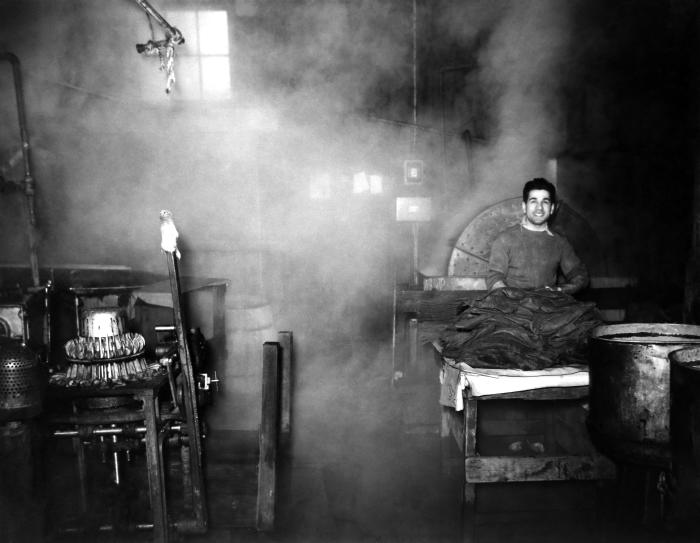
This historical image, which was provided by the Center for Disease Control's (CDC), National Institute for Occupational Safety and Health (NIOSH), was shot inside a Connecticut hat manufacturing plant. The photograph depicted a hat factory worker at his assembly line workstation working with colorizing agents, in the manufacture of felt hats. Note that the man was not wearing a protective breathing mask, or goggles. Working as he was with steam, and processed animal fur, airborne remnants of mercury nitrate could have easily been liberated, which he would then readily inhale. Inhalation of airborne mecury componds would have eventually lead to neurologic pathology, due to toxic heavy metal mercurialism. The image was published in the 'Public Health Bulletin', No. 263, 1941, in an article entitled, 'Mercurialism and its Control in the Felt-Hat Industry".